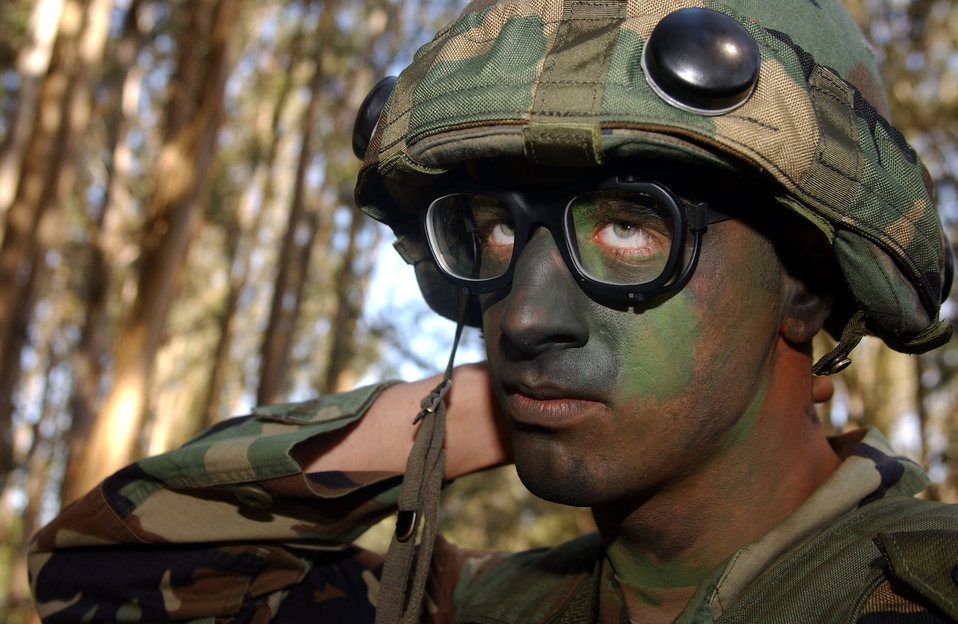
Camouflaged

VANDENBERG AIR FORCE BASE, Calif. -- Airman 1st Class Christopher Schultz applies camouflage make-up prior to engaging in the security forces tactics competition for Guardian Challenge here May 4. Guardian Challenge, the world's premier space and missile competition, is a four-day event held annually. It tests the wartime readiness of Air Force Space Command's Airmen in spacelift, ICBM operations, communications, maintenance, helicopter operations, security forces and chef food preparation. Airman Schultz is assigned to the 50th Space Wing, Schriever Air Force Base, Colo.